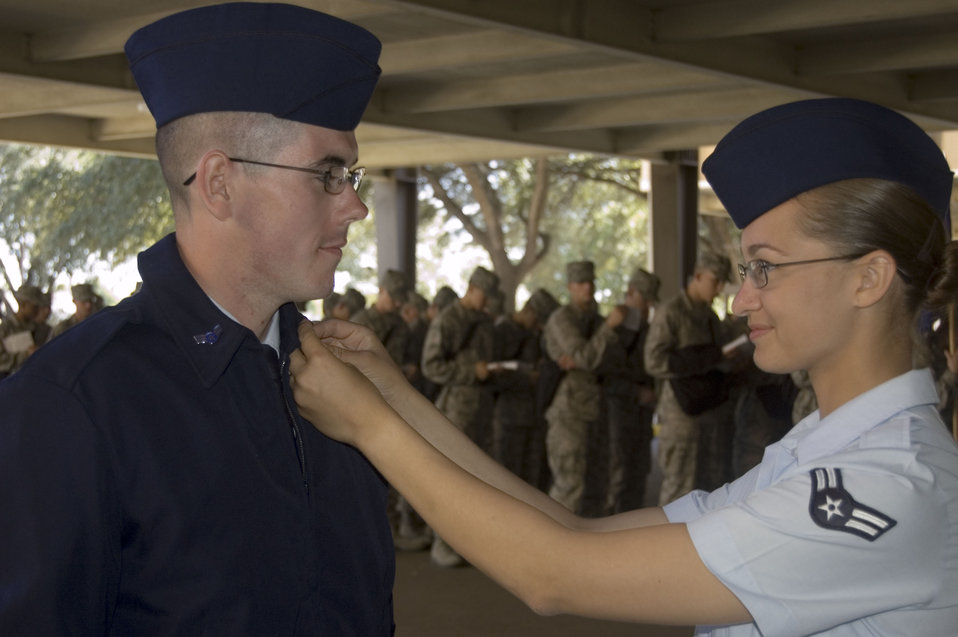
Honor graduates

Airman 1st Class Melissa Lafollette admires husband Airman 1st Class Steven Lafollette’s new rank lapel on the day of graduation from basic military training Oct. 24 at Lackland Air Force Base, Texas. The couple were among the 10 percent announced as honor graduates.